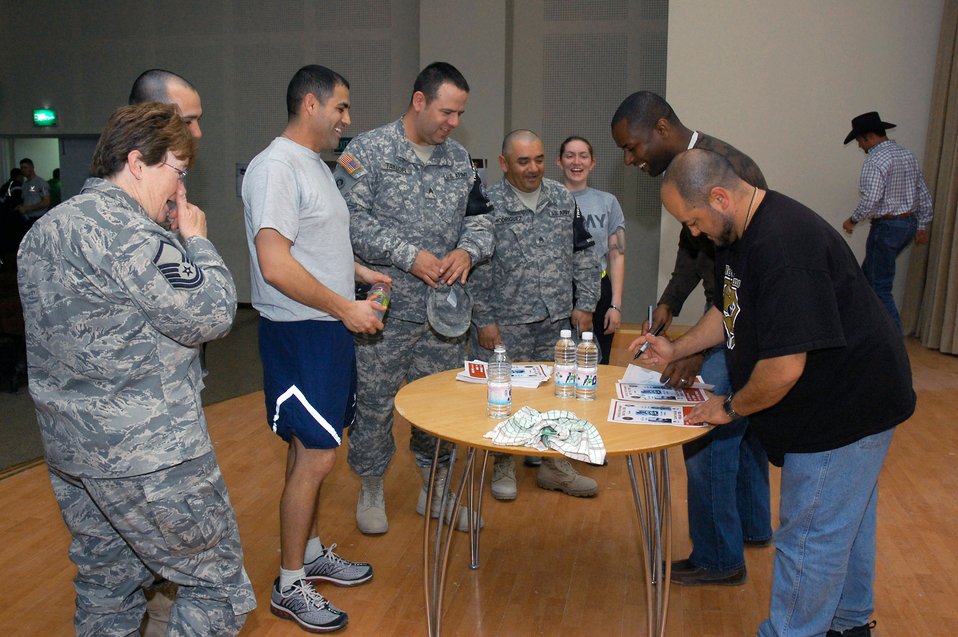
Entertainers use humor to deliver 'We Support You' message

Comedians Bill Dykes (front right) and Danta Jackson share a laugh with Airmen from the 386th Expeditionary Air Wing as they autograph flyers following their Feb. 26 show at a Southwest Asia air base. The comedians are on a Multinational Corps Iraq, Army Morale Welfare Recreation, Lone Wolf Entertainment Comedy Tour 2008, which provides entertainment to deployed troops in support of operations Enduring Freedom and Iraqi Freedom.